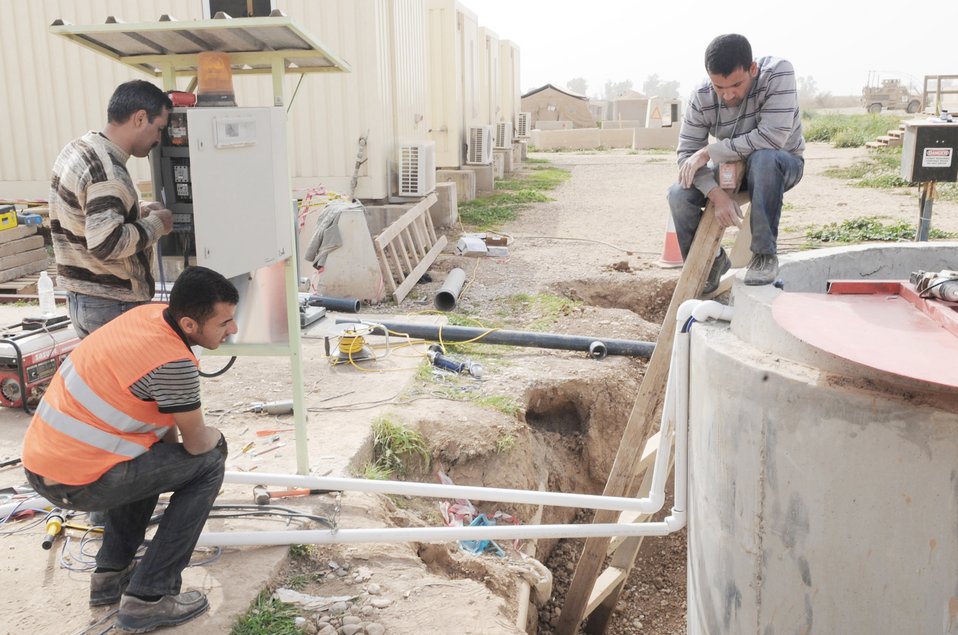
Joint project lifts economy, skills in Kirkuk

Crew members of Black Gold Holding Company build a new lift station Feb. 24, 2010 at Kirkuk Air Base, Iraq.